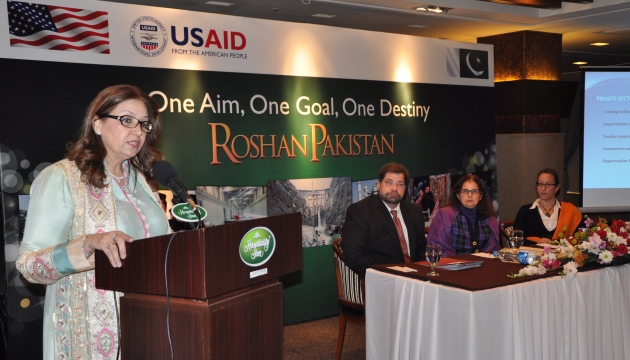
Presentation on Role of Private Sector in Eductaion.